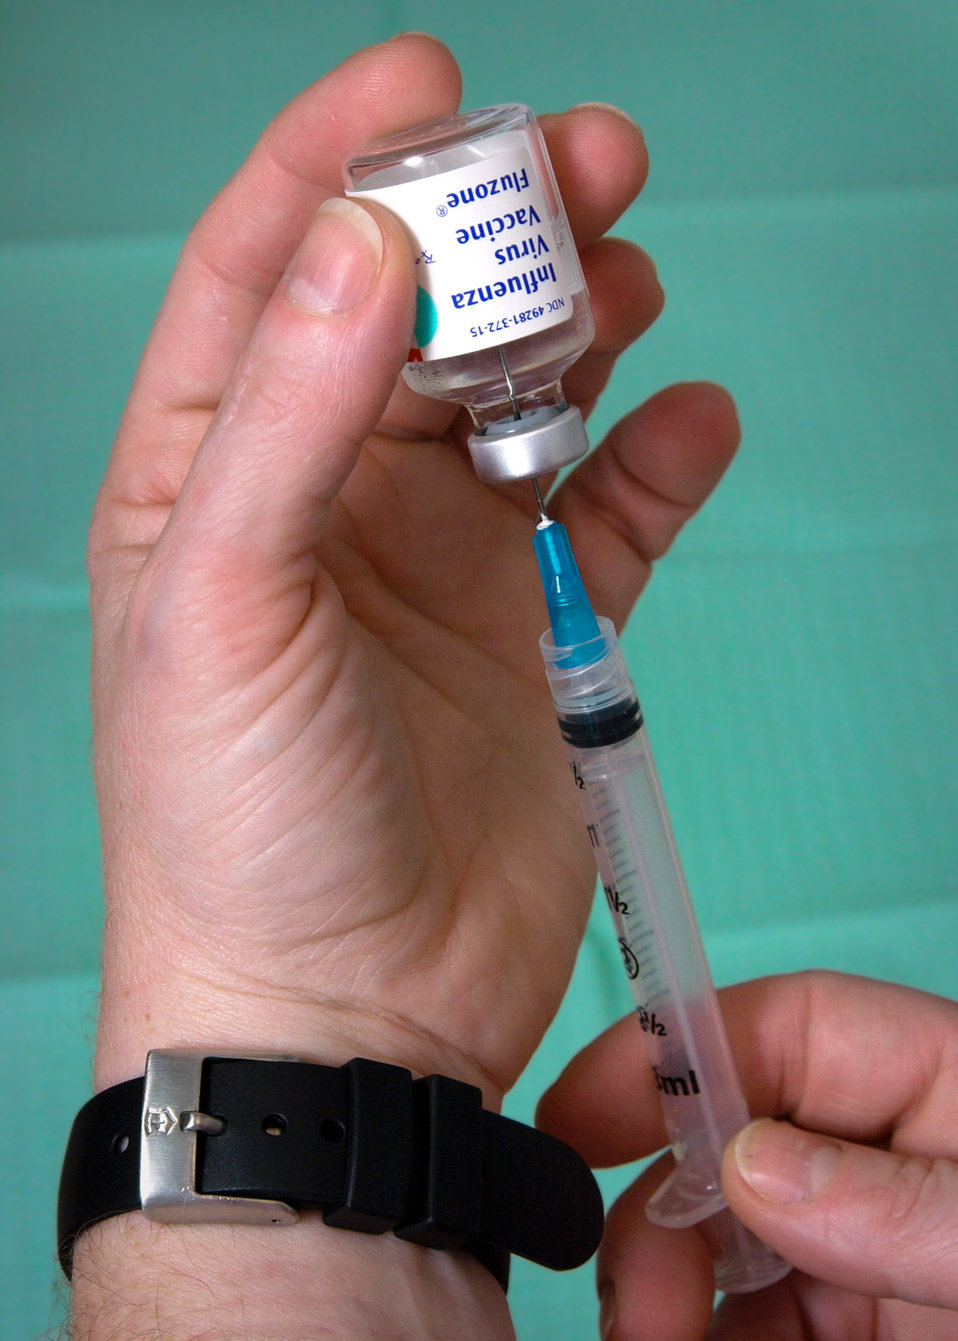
This is CDC Clinic Chief Nurse Lee Ann Jean-Louis extracting Influenza Virus Vaccine, Fluzone� from a 5 ml. vial.